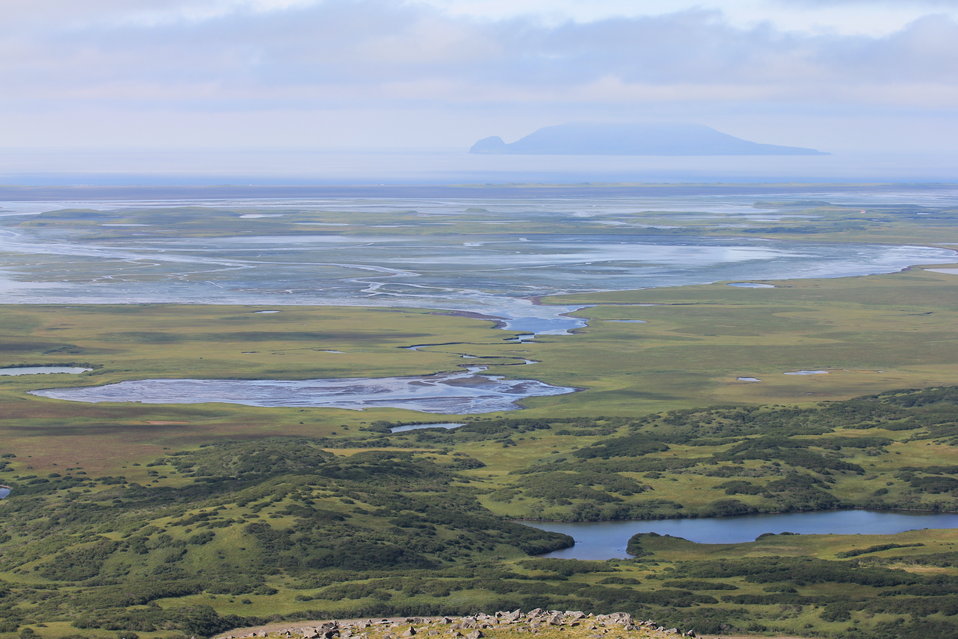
Izembek Wilderness

Wilderness, Izembek National Wildlife Refuge
Photo by Kristine Sowl,
USFWS, Public Domain